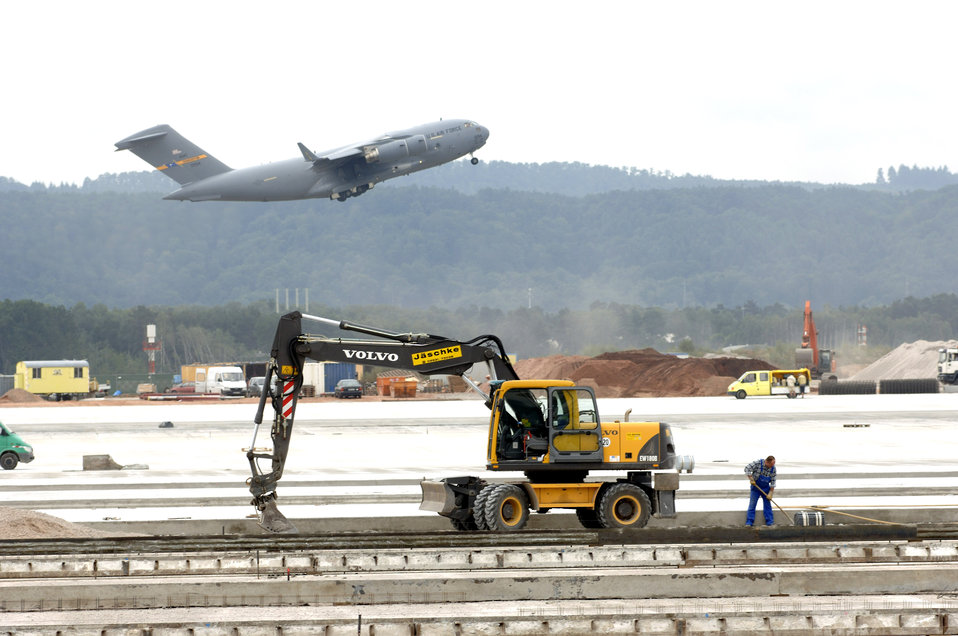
Rhein-Main transition on track

RAMSTEIN AIR BASE, Germany -- A C-17 Globemaster III from Charleston Air Force Base, S.C., takes off from here on a return flight home. Ongoing construction on the parking ramp, part of the Rhein-Main Transition Program, will make Ramstein the new